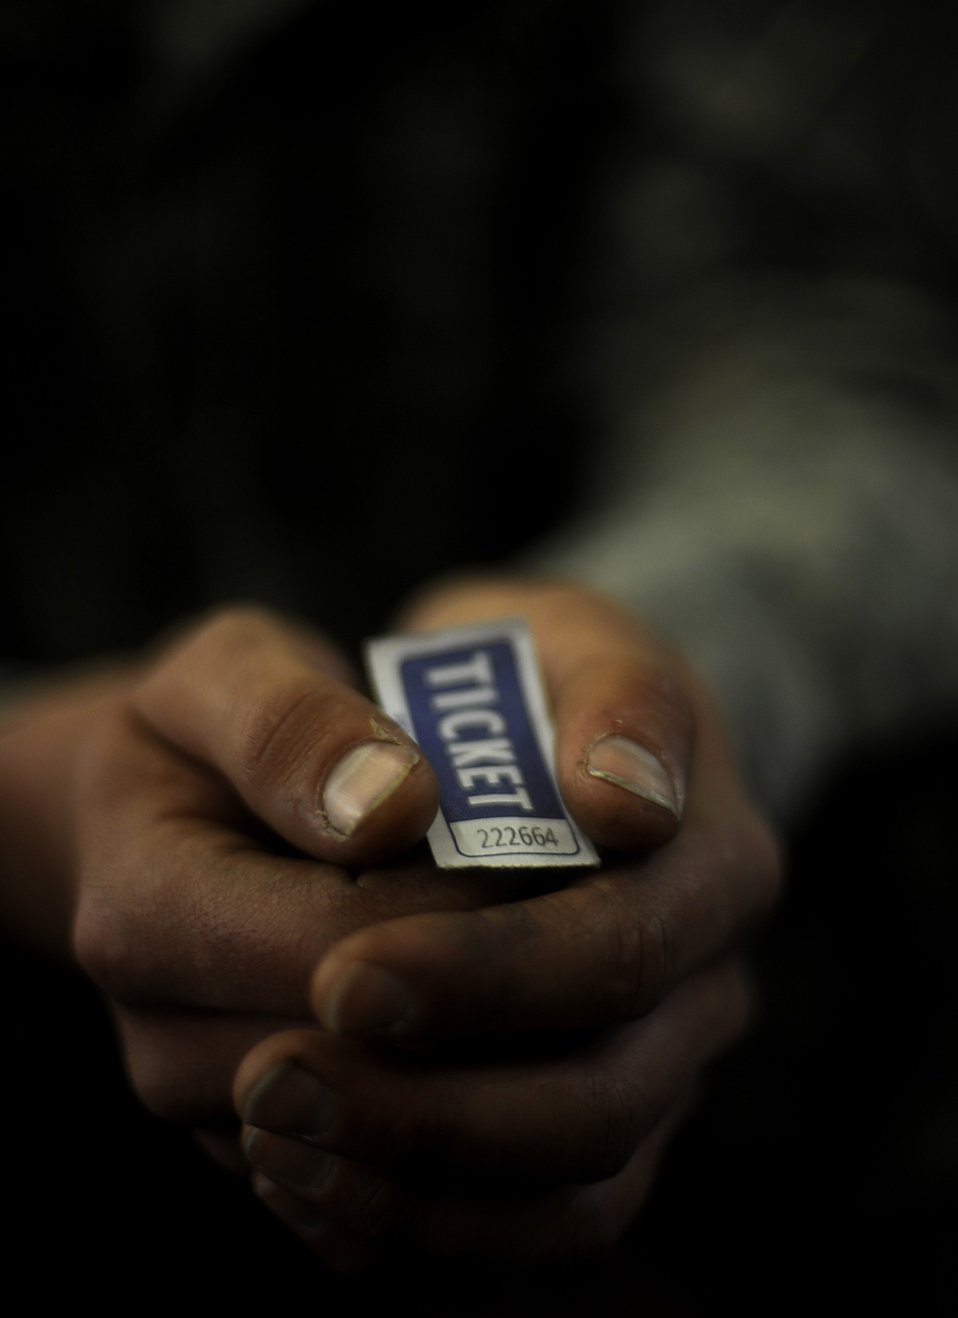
Operation Toy Drop

With his ticket in hand, Army Spc. Jerrod Grant from the 82nd Airborne Division from Fort Bragg, N.C., listens for his lottery number to be called for a chance to jump and earn foreign jump wings after donating a toy Dec. 5 during Operation Toy Drop at Pope Air Force Base, N.C. Operation Toy Drop is an annual Airborne jump at Fort Bragg in its 11th year hosted by the Army Civil Affairs and Psychological Operations Command (Airborne), and supported by Fort Bragg's XVIII Airborne Corps and the Air Force Reserve Command's 440th Airlift Wing at Pope AFB that gives Soldiers and Airmen the opportunity to help local families in need over the holidays while boosting morale and incorporating valuable training. More than 3,000 Soldiers donated a toy for a lottery ticket and the chance to jump under a foreign jumpmaster, earning them their foreign jump wings. This year, German and Irish jumpmasters will be issuing the commands from C-130 Hercules aircraft during the operation.